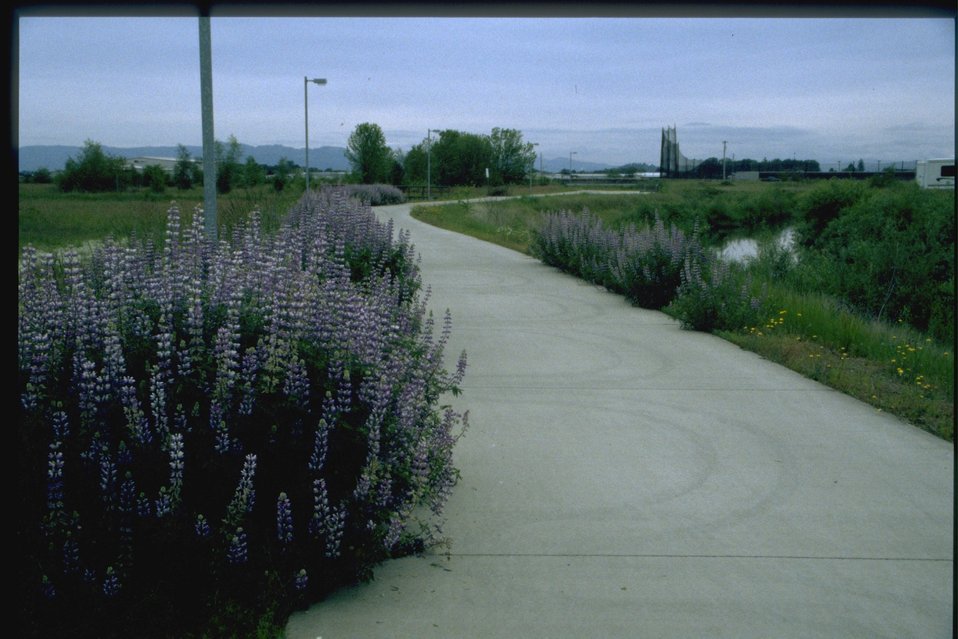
Lupine wildflowers along path.